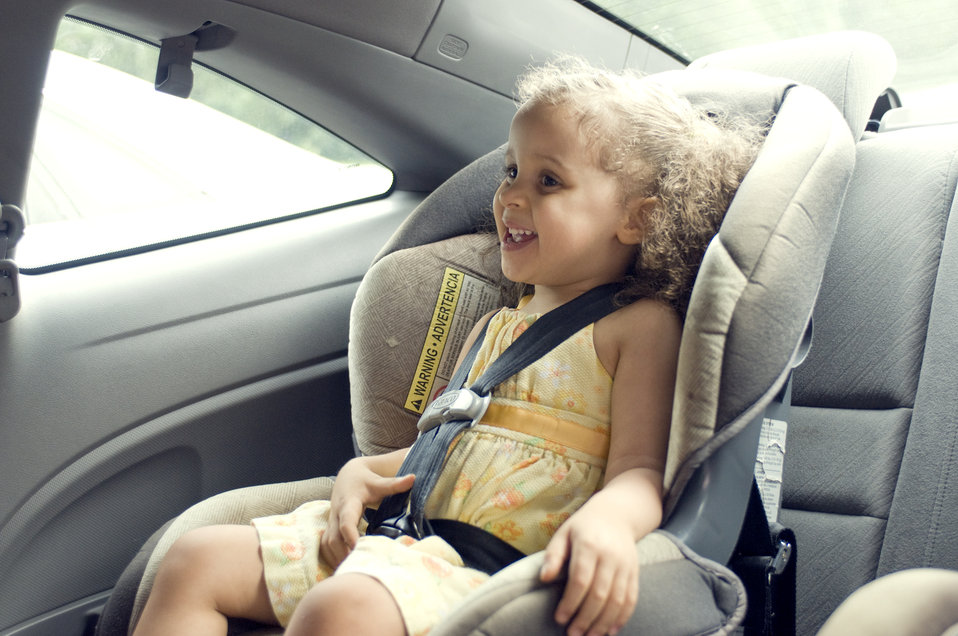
After having been secured in her back seat-located car seat, this young female child was now ready to go for a safer, more secure ride with a qualified driver.